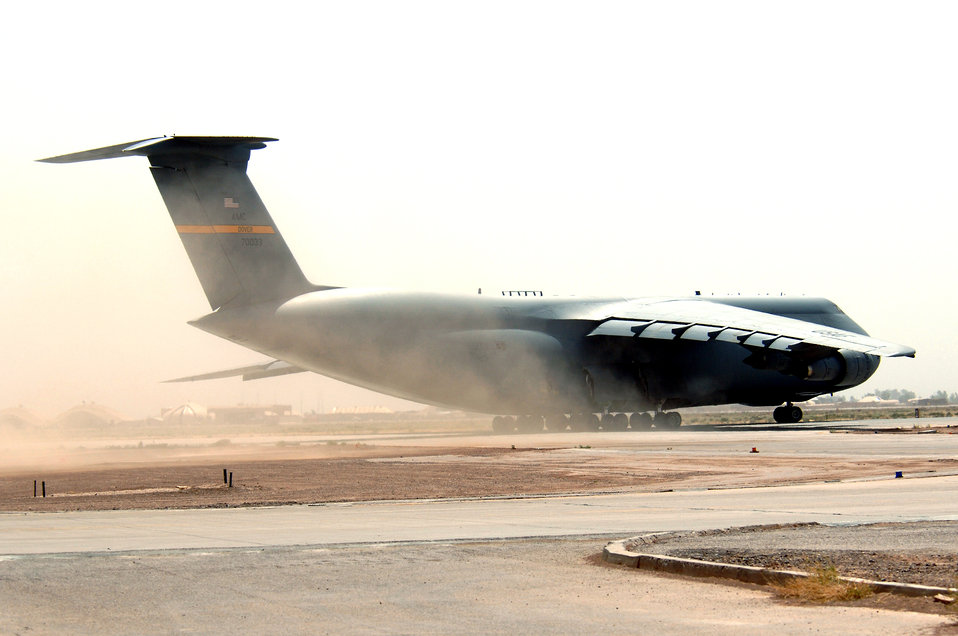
Moving the goods at Balad

A C-5 Galaxy taxis for takeoff at Balad Air Base, Iraq, on Tuesday, June 6, 2006. The aircraft is from Dover Air Force Base, Del.